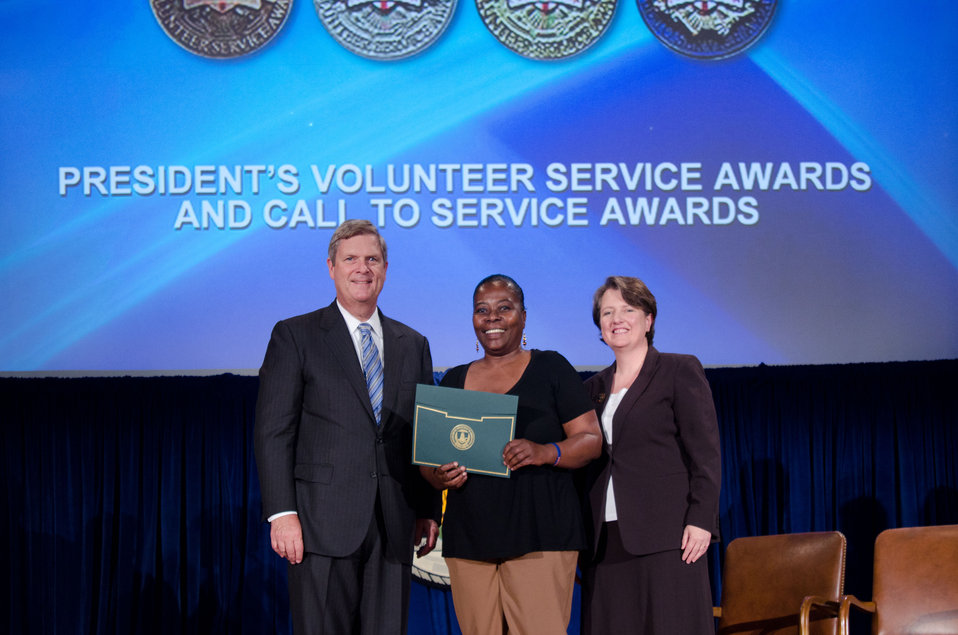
Agriculture Secretary Tom Vilsack (l) and Deputy Secretary Kathleen Merrigan (r), presents the President’s Volunteer Service Awards and Call to Service Award to Patricia Cleveland Agriculture Research Service. On Wednesday, September 14, 2011 in the Jefferson Auditorium at the US Department of Agriculture in Washington, DC.